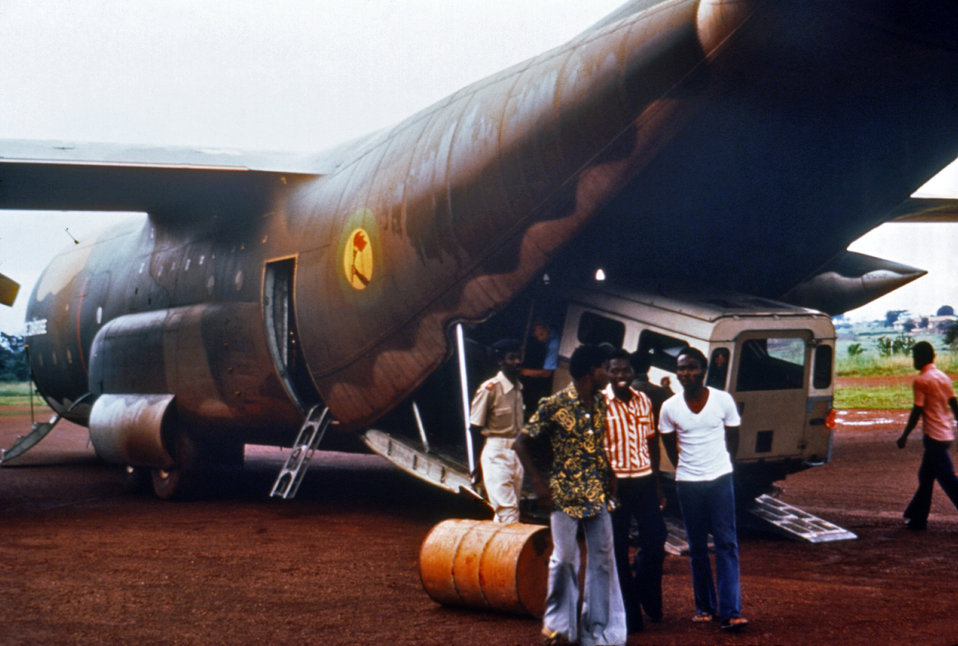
This 1976 photograph, taken in an airfield in Yambuku, Zaire, showed the offloading of a Land Rover to be used by the Ebola team during the first outbreak.